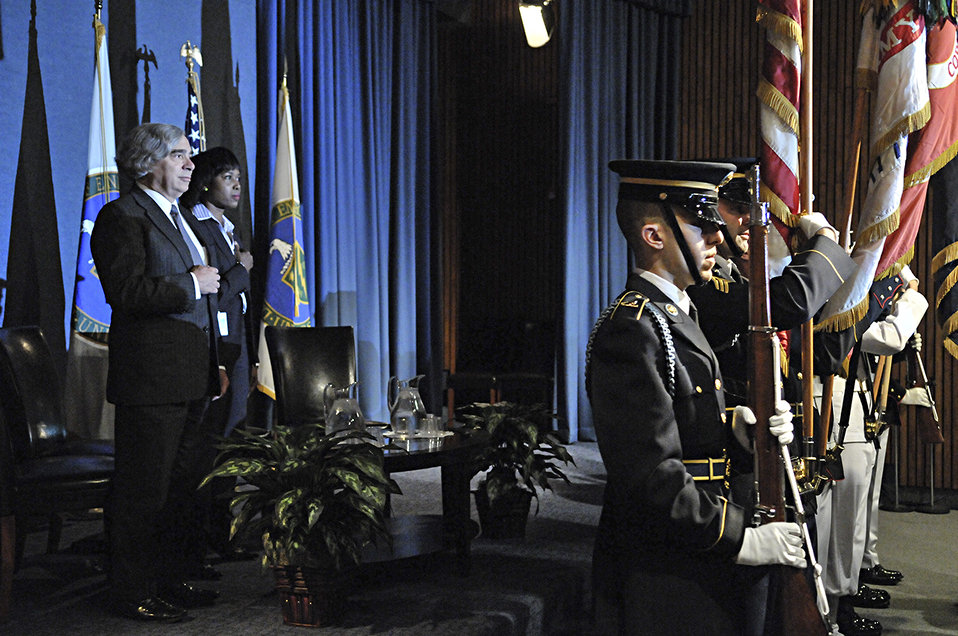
Launching the Minorities in Energy Initiative

The Office of Economic Impact and Diversity kicked off the Minorities in Energy Initiative on September 24, 2013, with Secretary Ernest Moniz.